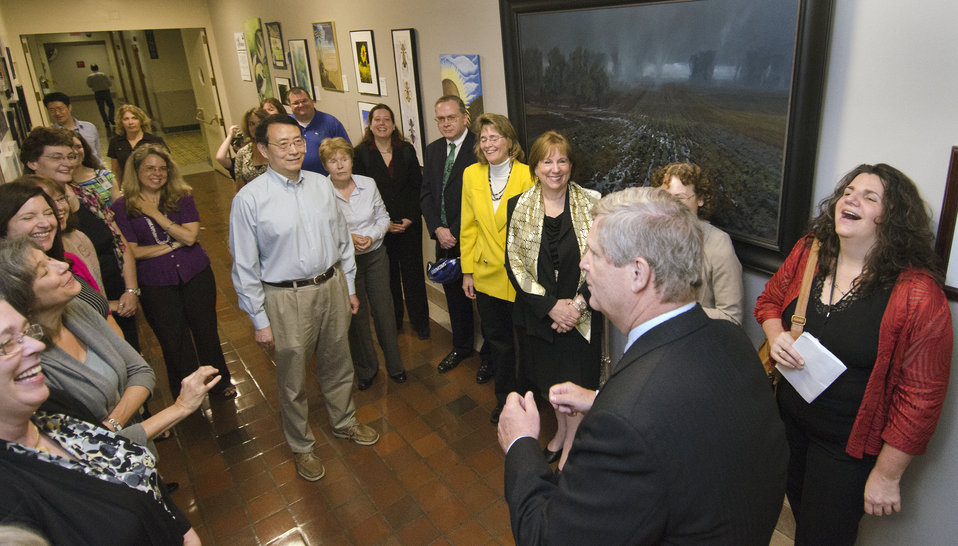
Agriculture Secretary Tom Vilsack visits the gallery of winning entries and some of the employee artists from the inaugural competition for Art and Agriculture, Thursday, May 31, 2012, in, in the South Building, Washington, D.C. U.S. Department of Agriculture (USDA) full-time and part-time employees submitted art based on ten agricultural themes. The event was part of USDA's 150th Anniversary celebration and the winning artwork is on display from May 15 through December 31, 2012. Artistic expression is a creative outlet that is vital for an individual to grow and develop in their environment.